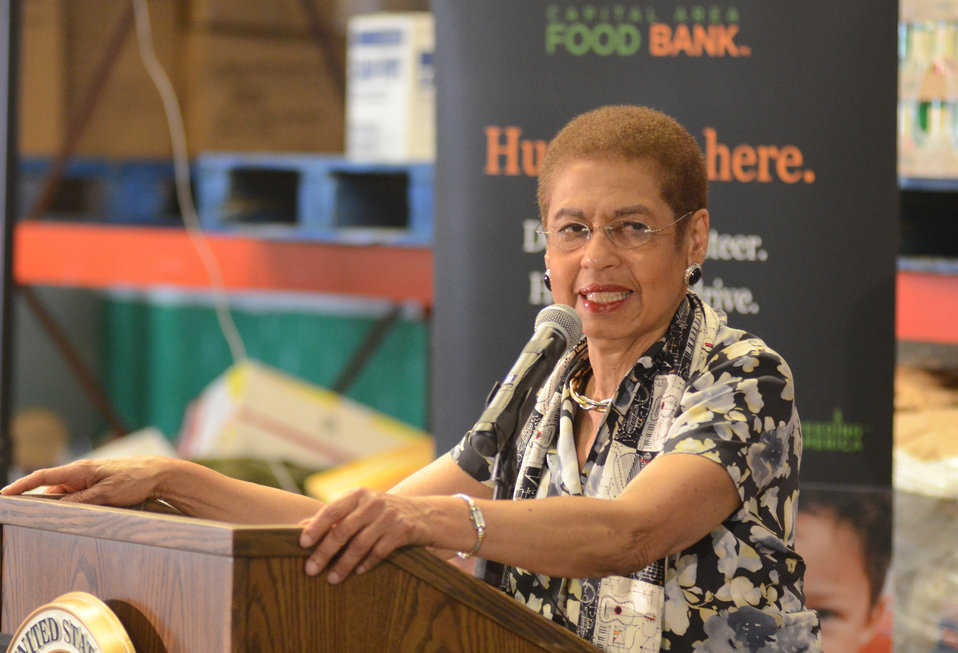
Congresswoman Elenor Holmes Norton makes remarks at the Feds Feed Families Kick-Off event at the Capital Area Food Bank (CAFB) in Washington, D.C., on Monday, June 11, 2012.